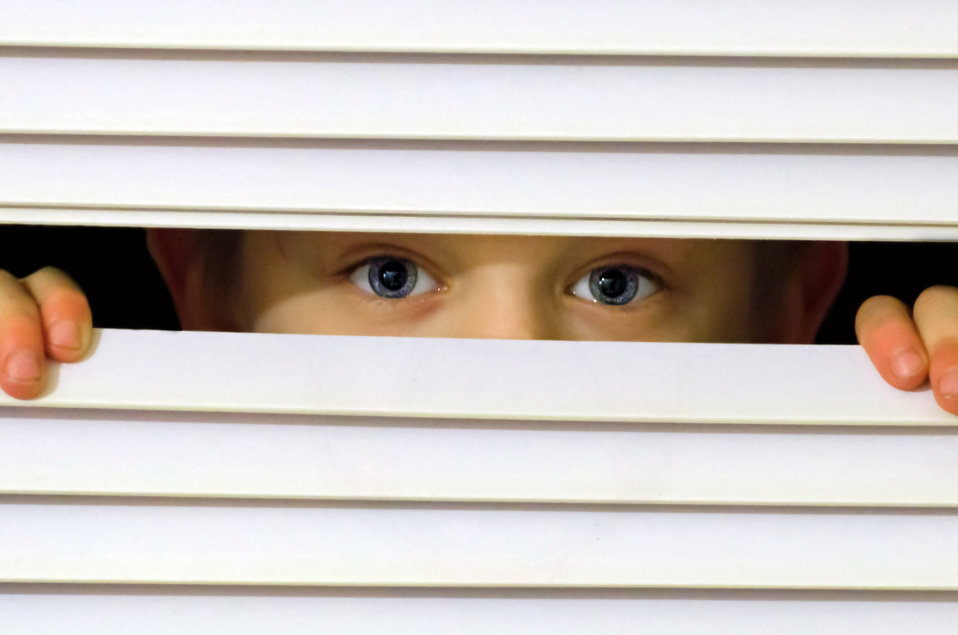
I see you - eye.